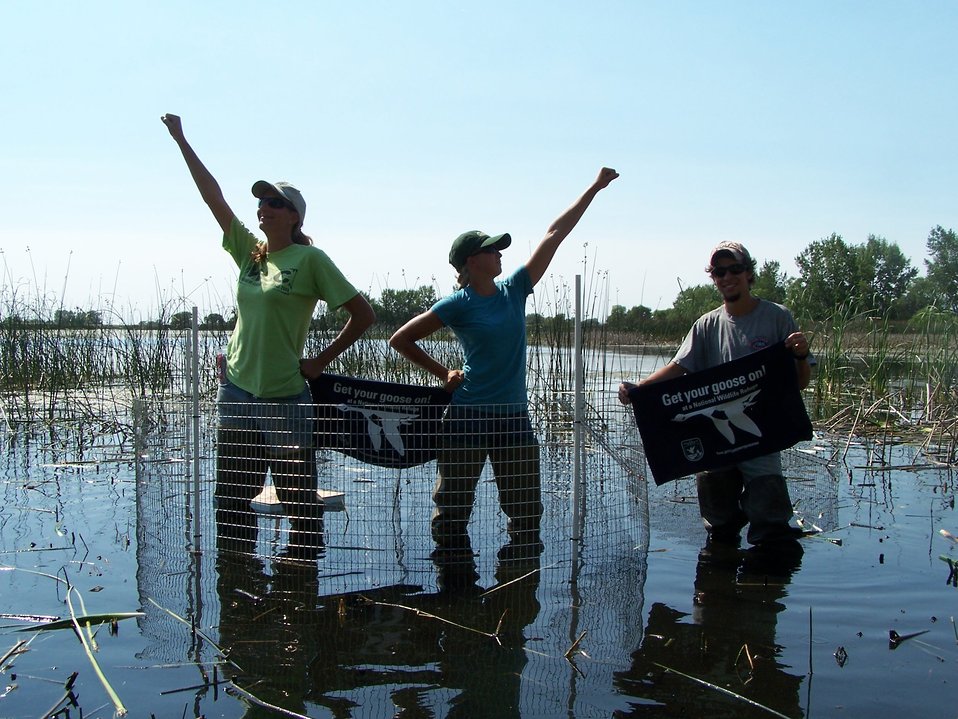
Get Your Goose On! - While Trapping Ducks

Bowdoin STEPs Get Their Goose On while assembling a duck swim-in trap.